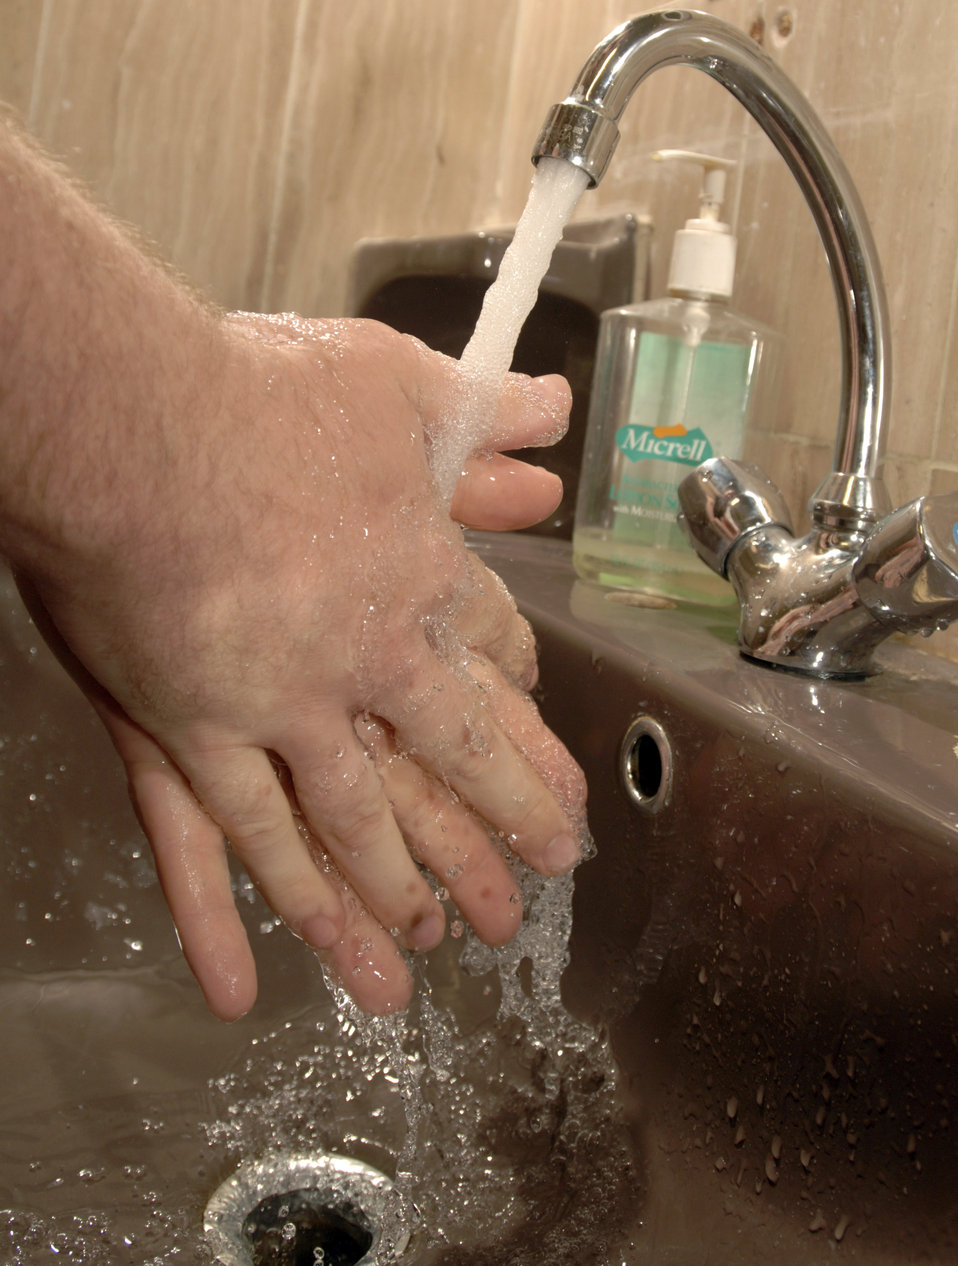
Bird flu -- Fact and fiction

Good handwashing techniques are one of the best measures to prevent not only Avian Flu but other diseases and illnesses.